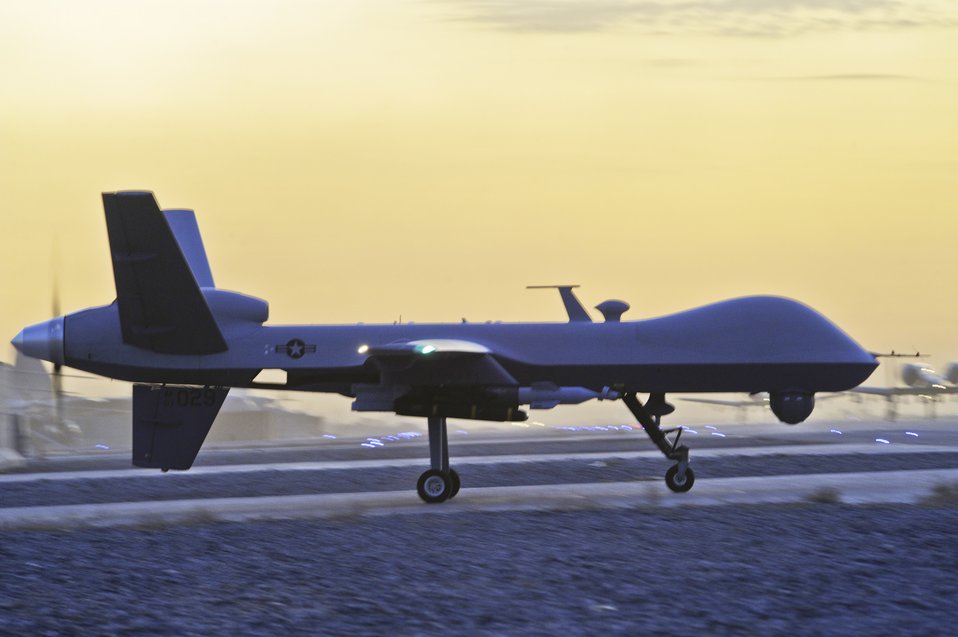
Ready to hunt

An MQ-9 Reaper taxis at Kandahar Airfield, Afghanistan, Dec. 27, 2009.